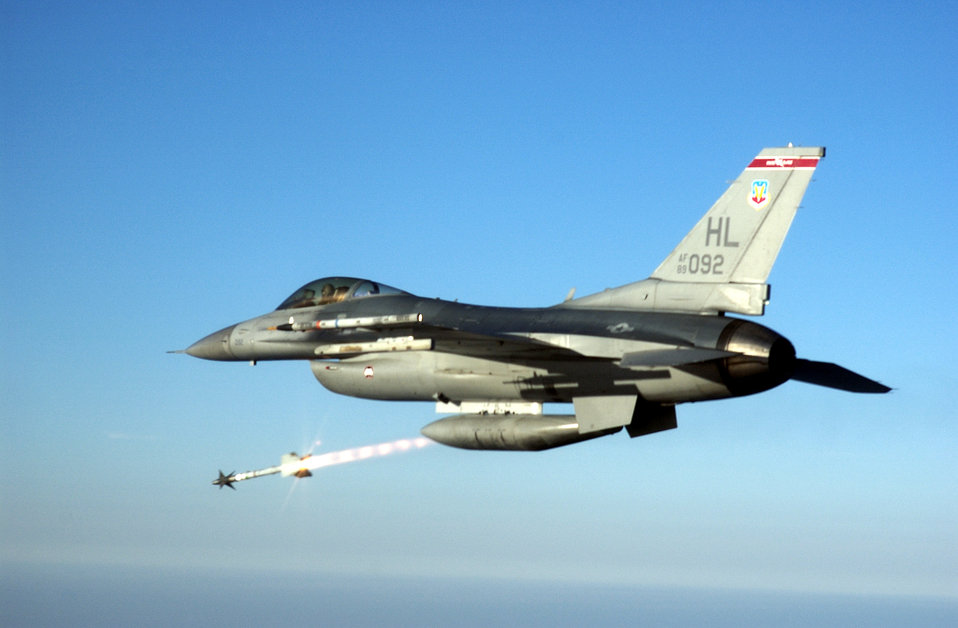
Die, drone, die!

OVER THE GULF OF MEXICO -- Capt. Steve Boatright, an F-16C Fighting Falcon pilot, fires an AIM-9M Sidewinder heat-seeking missile at an aerial target drone over the Gulf of Mexico. Captain Boatright is assigned to the 34th Fighter Squadron at Hill Air Force Base, Utah. The squadron recently deployed to Tyndall AFB, Fla., to fly air-to-air weapons testing missions.